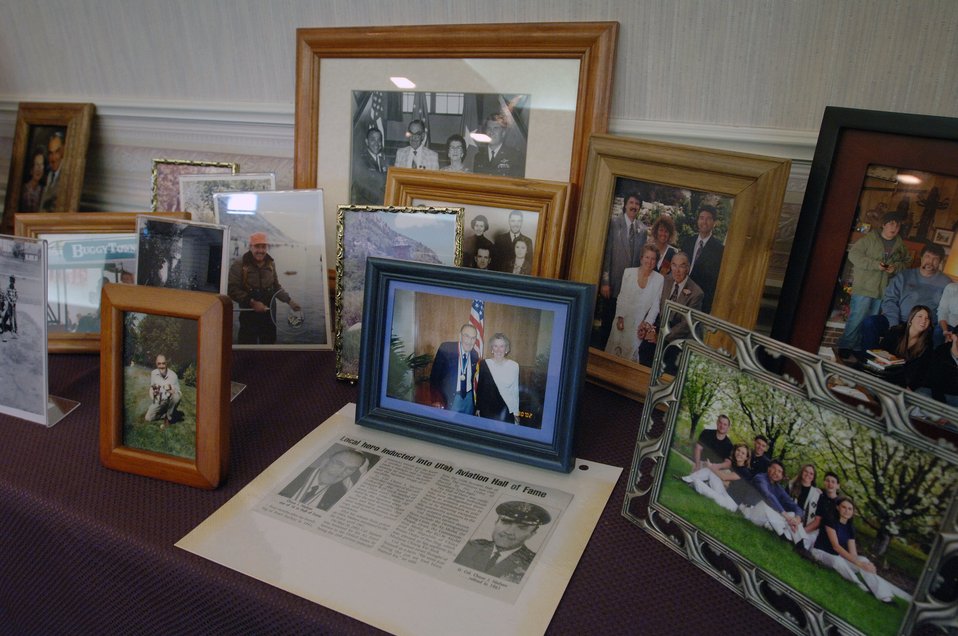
Lt. Col. Chase Nielsen service held March 28

Family photos and other memorabilia adorn the chapel of the Allen-Hall Mortuary where family and friends attended Lt. Colonel Chase J. Nielsen memorial service in Hyrum, Utah March 28. Colonel Nielsen was one of the few remaining members of the famed Doolittle Raiders. The members of the Doolittle Raiders reached national acclaim in 1942 after launching the first successful aerial bombing raid on Tokyo, Japan as retaliation for the Japanese bombing of Pearl Harbor, Hawaii in December of 1941.